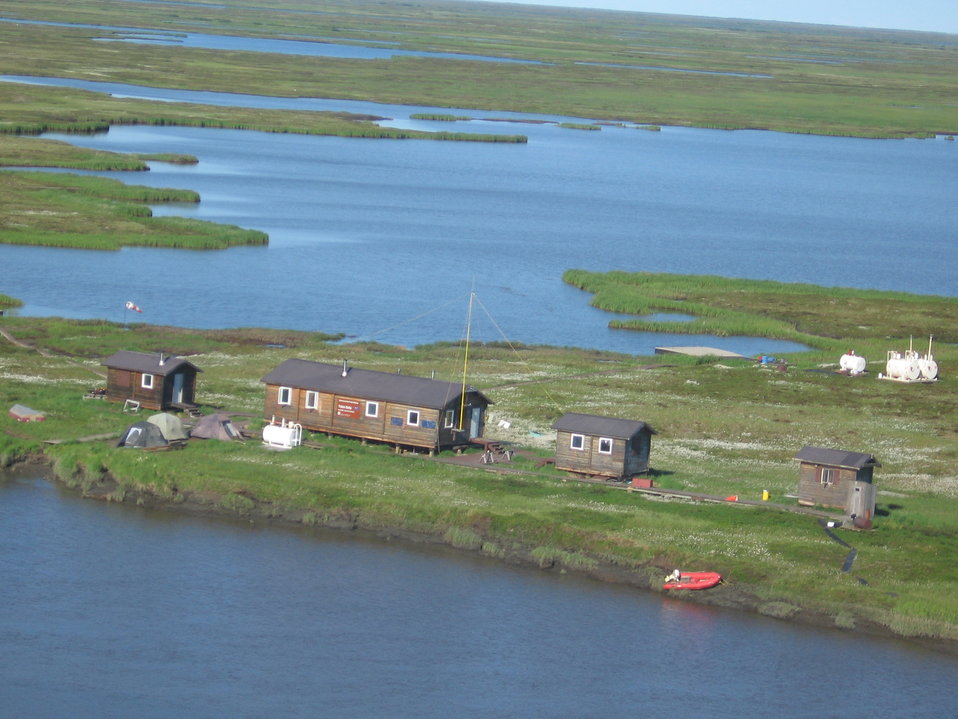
Kanaryarmiut Field Station

This field station used for many different research projects on the Delta.

USFWS Yukon Delta NWR